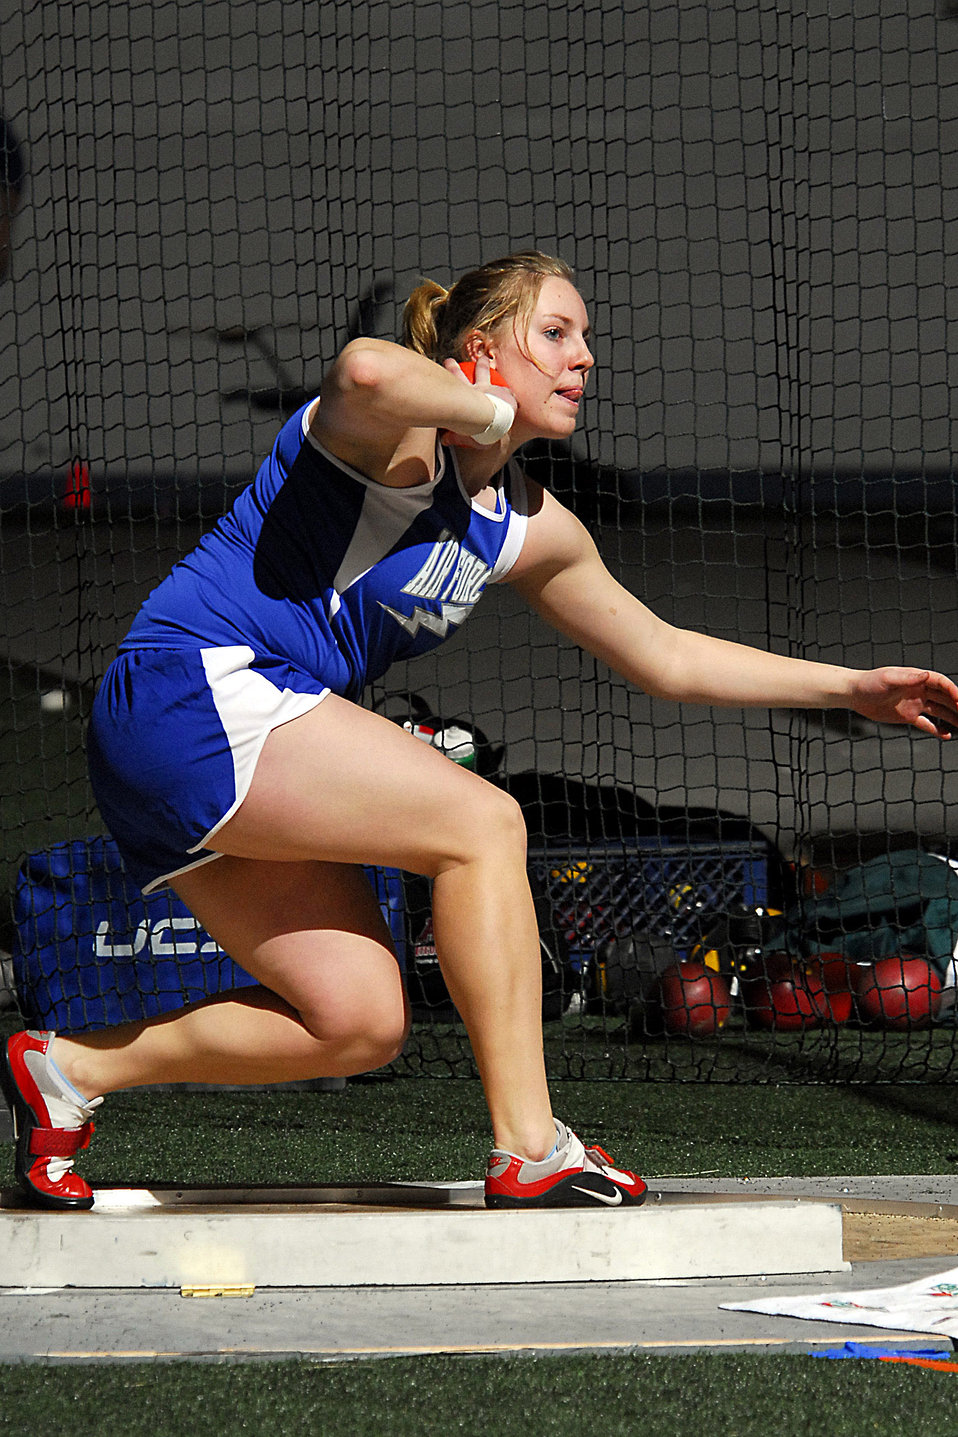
Falcons Conclude Competition at Air Force Open

Sophomore Sara Neubauer competes in the shot put, finishing in second place with a throw of 48' 8